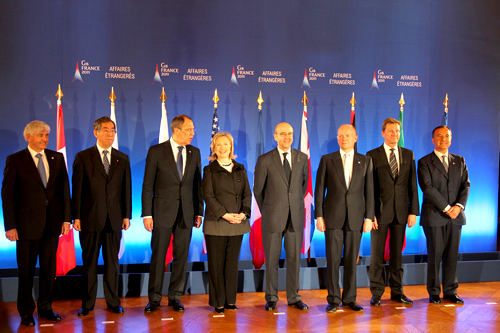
Secretary Clinton With Foreign Ministers of the G8 Pose for a Photo

Left to right, Foreign Ministers Lawrence Cannon of Canada, Takeaki Matsumoto of Japan, Sergey Lavrov of Russia, U.S. Secretary of State Hillary Rodham Clinton, France's Alain Juppe, William Hague of Britain, Guido Westerwelle of Germany, and Franco Frattini of Italy pose for a photo during a Group of Eight foreign Ministers meeting in Paris, on March 14, 2011.